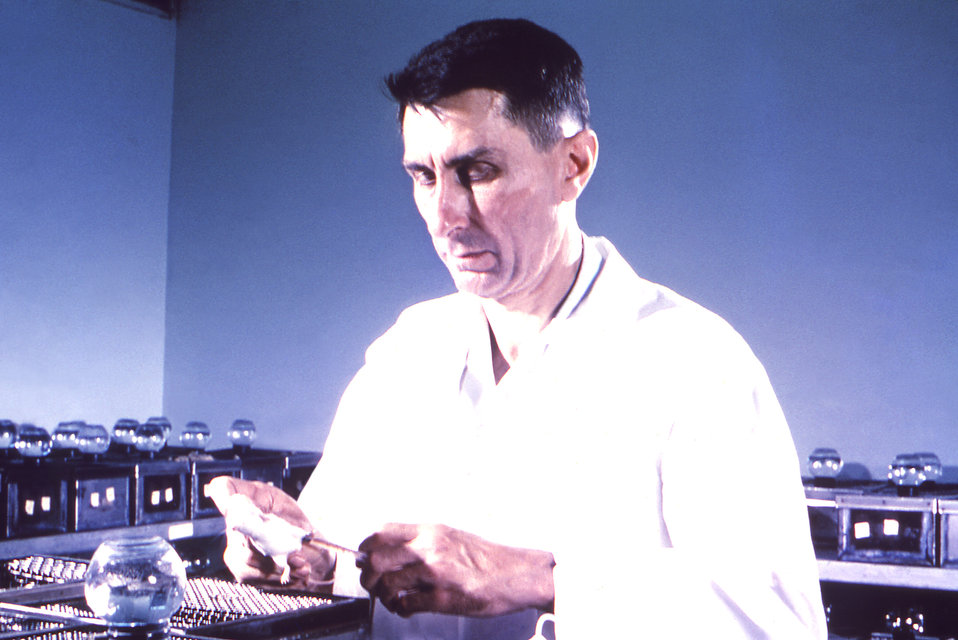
Taken inside a laboratory setting, this photograph showed Centers for Disease Control official, Charles C. Shepard, M.D., who was internationally recognized for his work in leprosy, and Legionnaires' disease research.